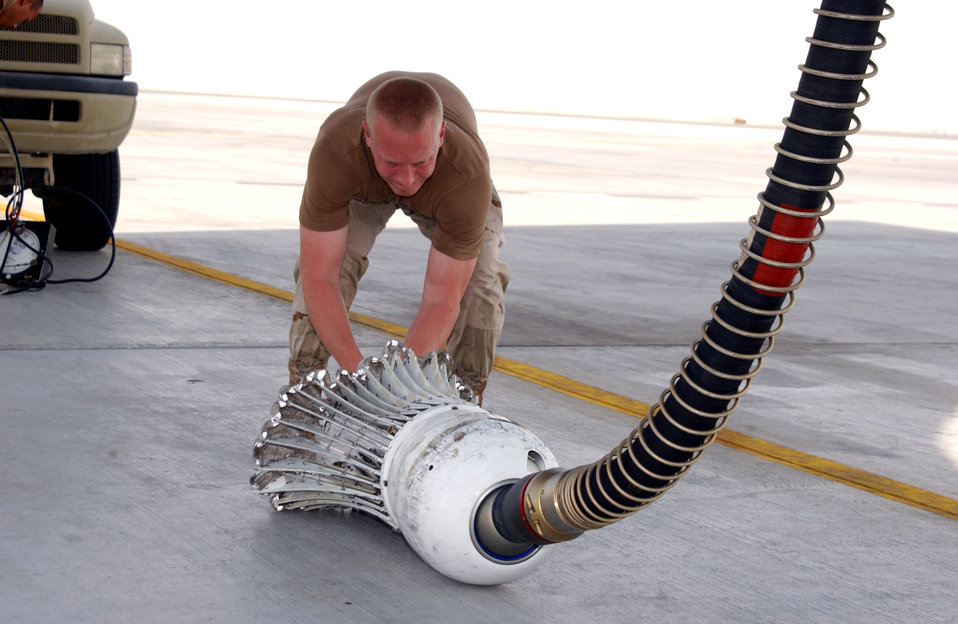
KC-10 maintainers keep mission flowing

Airman 1st Class Michael Pianella prepares a drogue for a fuel pressure check at a deployed location in Southwest Asia on July 30. Airman Pianella is a hydraulics specialist with the 380th Expeditionary Aircraft Maintenance Squadron.